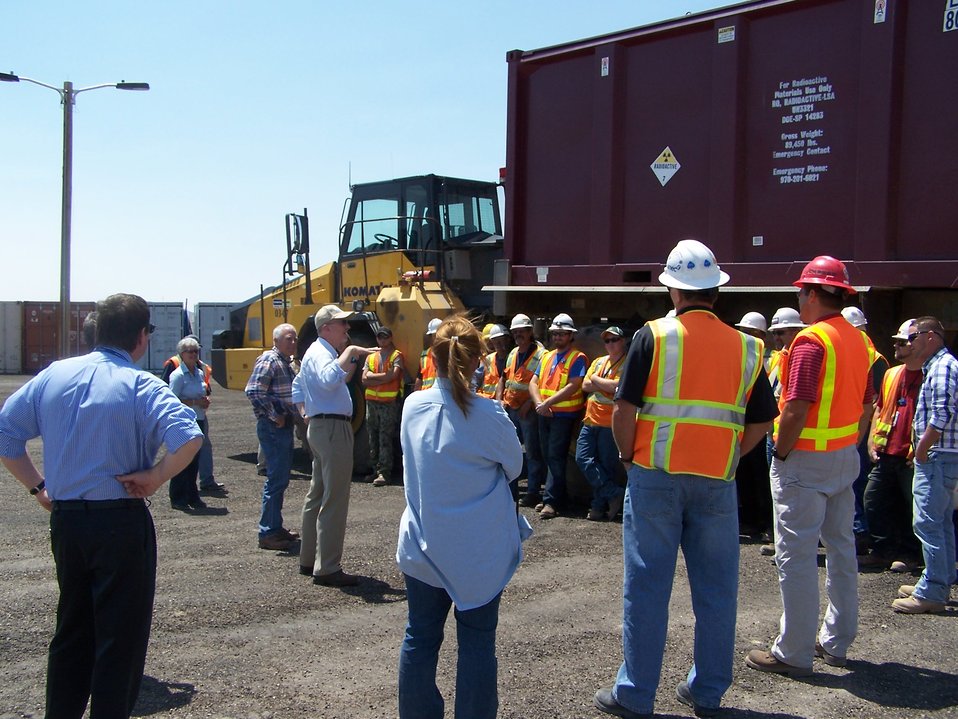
Huizenga Visit to Moab

Senior Advisor for Environmental Management David Huizenga visited the Moab site during June of 2012.